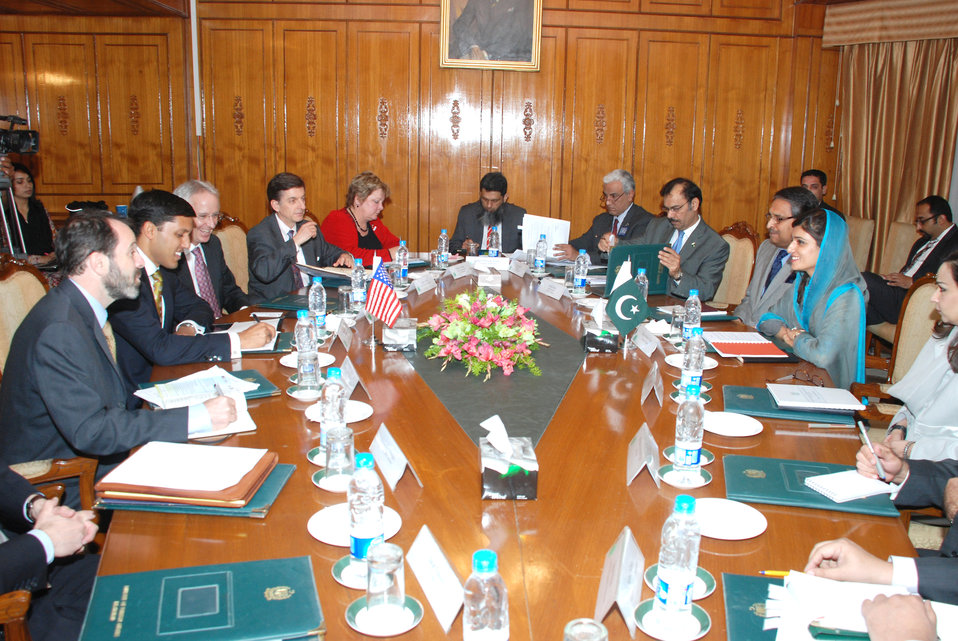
US officials Meeting with Minister of Foreign Affairs, Assistance to Pakistan Remains Strong at Islamabad on April 14, 2012